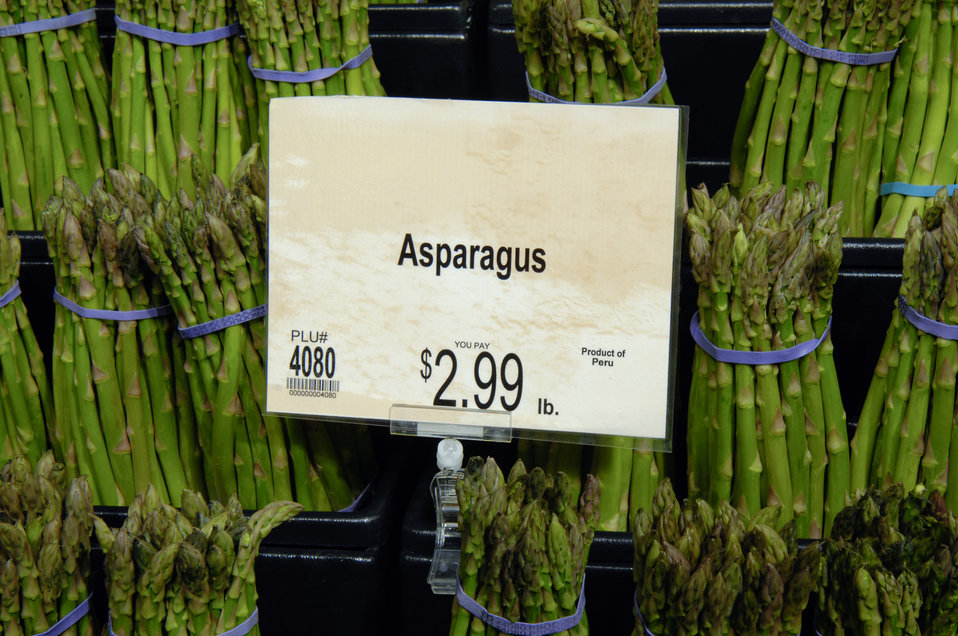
Asparagus sold at Wegman’s Supermarket in Fredericksburg, Virginia on September 1, 2009 displays the required Country of Origin Label (COOL). COOL is a labeling law that requires retailer, such as full-line grocery stores, supermarkets, and club warehouse stores to notify their customers with information regarding the source of certain foods. Food products and covered commodities contained in the law include muscle cut and ground meats of beef, veal, pork, lamb, goat, and chicken; wild and farm-raised fish and shellfish; fresh and frozen fruits and vegetables; peanuts, pecans, and macadamia nuts; and ginseng. The U.S. Department of Agriculture (USDA) Agricultural Marketing Service (AMS) is responsible for the administration and enforcement of COOL.